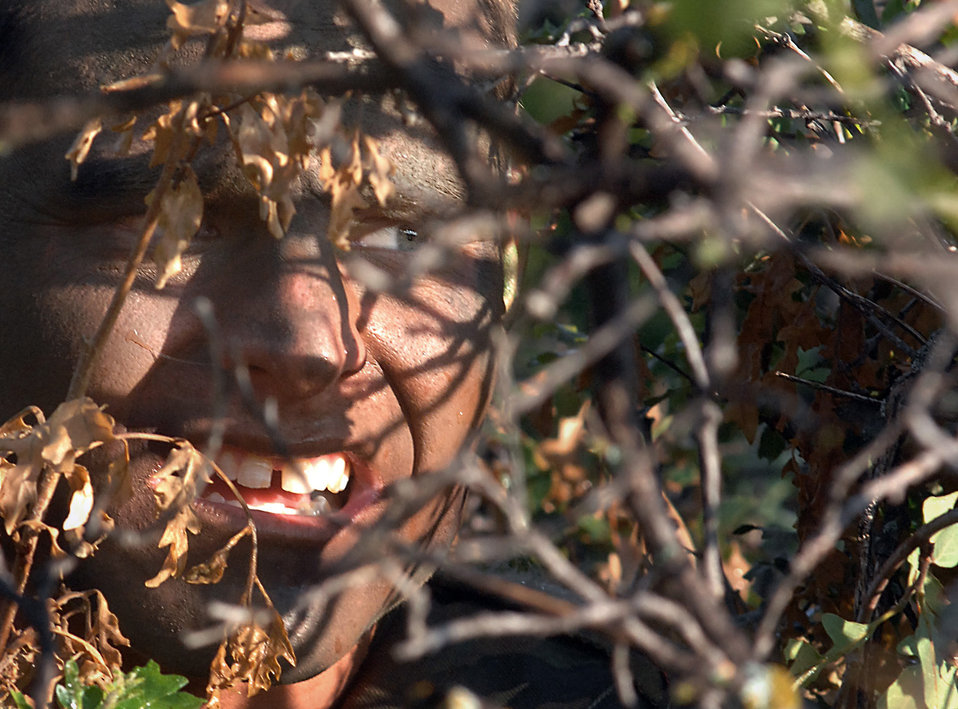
The watcher

Senior Airman Arthur Sgruggs stays hidden while watching for